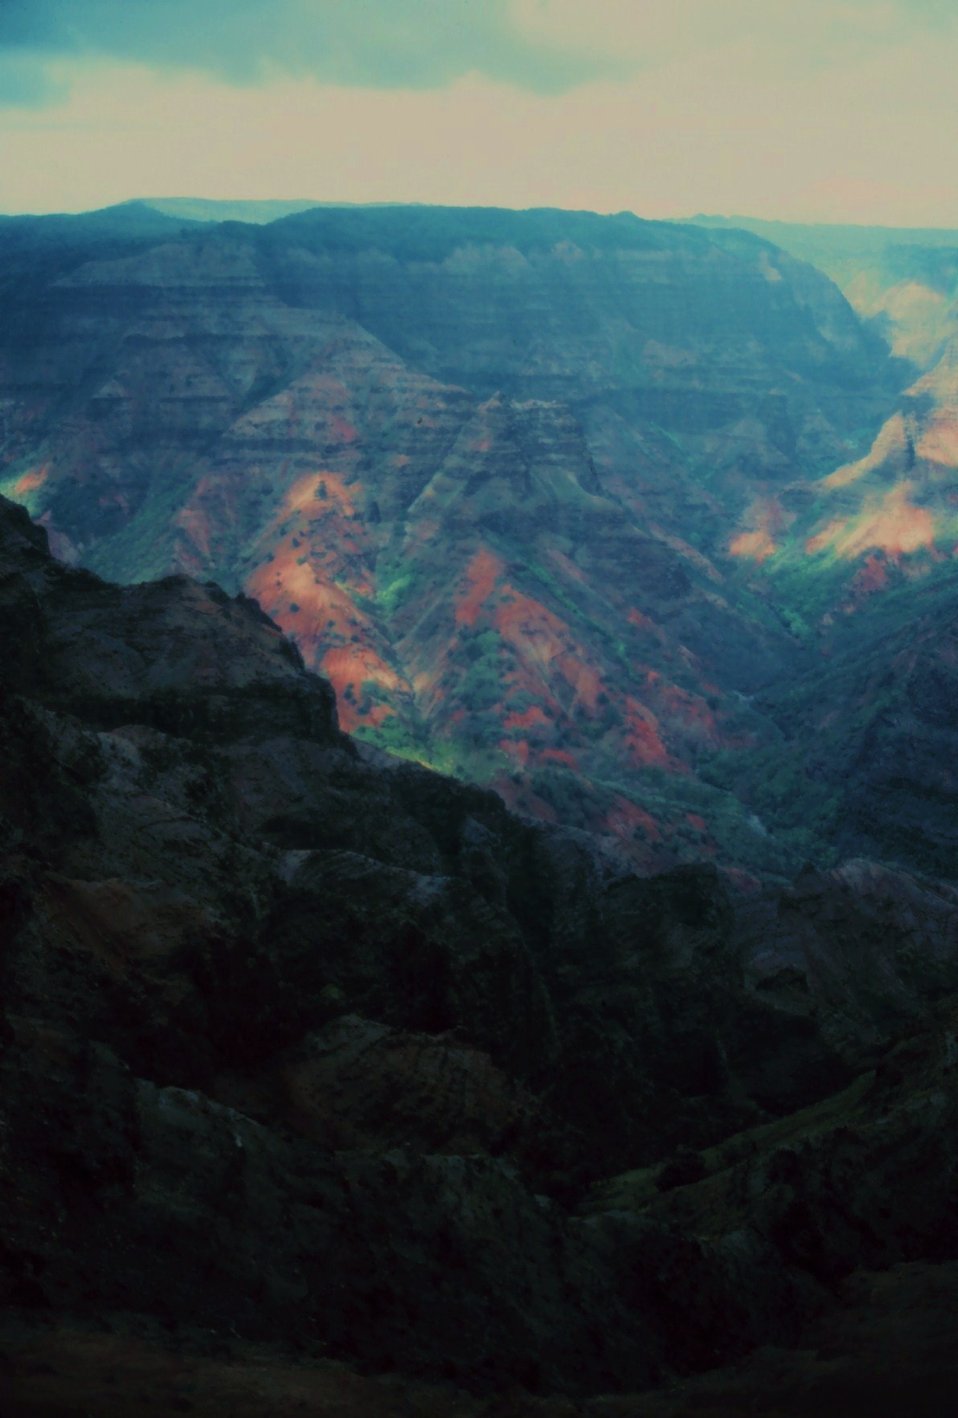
Waimea Canyon - the Grand Canyon of the Pacific